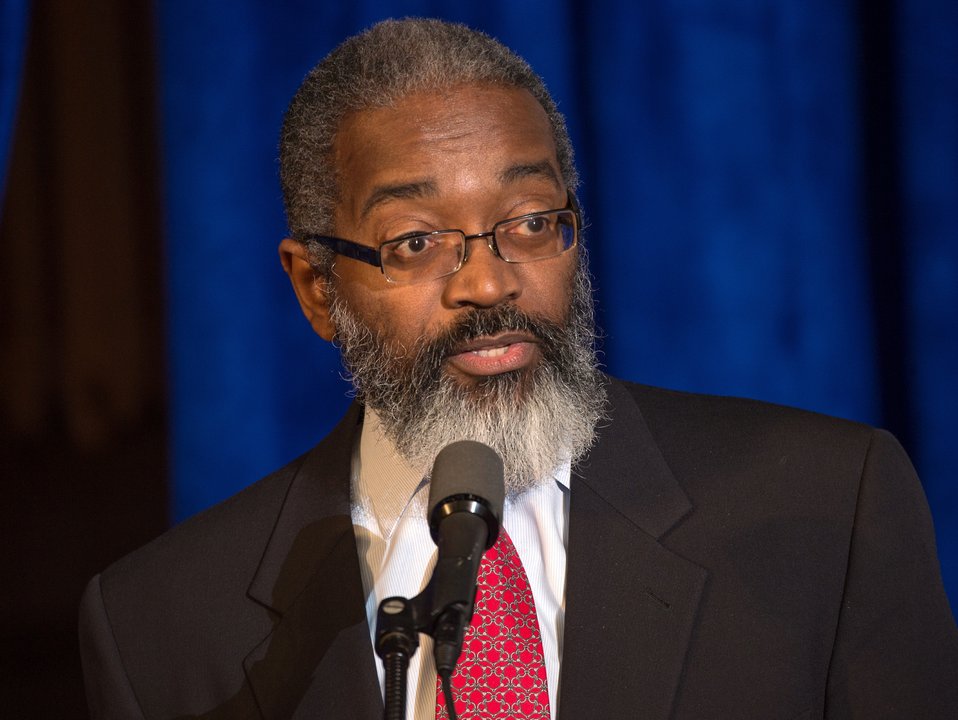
U.S. Department of Agriculture (USDA) Assistant Secretary for Administration Dr. Gregory Parham speaks at the at the 2013 Secretary's Honor Awards ceremony held in the Jefferson Auditorium at USDA in Washington, D.C. on Wednesday, Dec. 11, 2013.